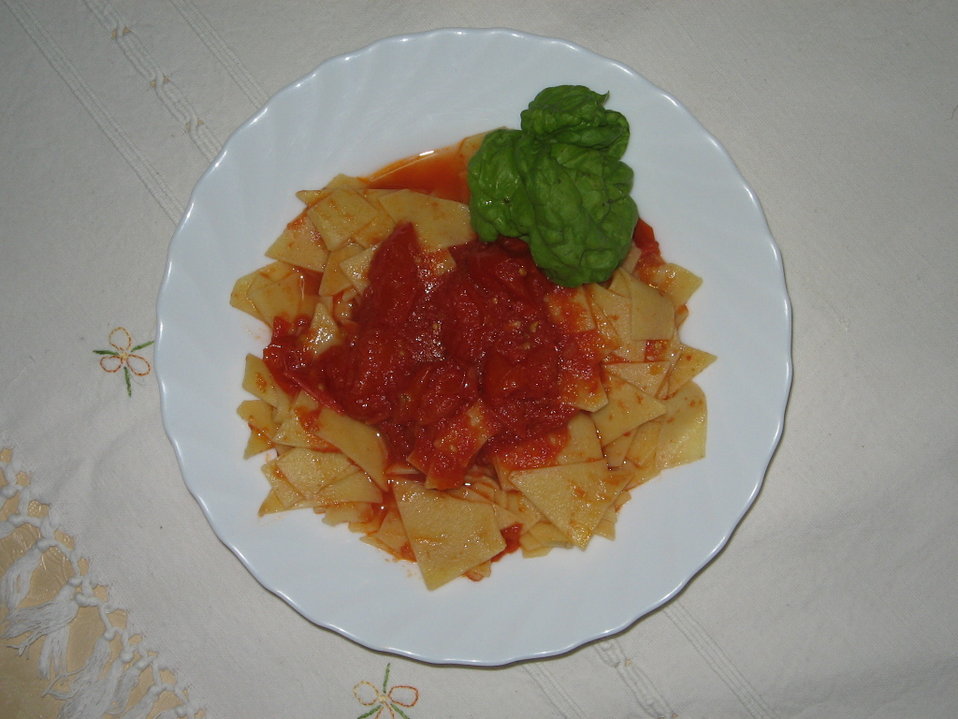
Italiano: Mario Molinara, Produzione artigianale, Paccozza con il pomodoro fresco, Pubblico Dominio. Da assaggiare durante la sagra della Paccozza nel mese di agosto a Pesco Sannita (BN)